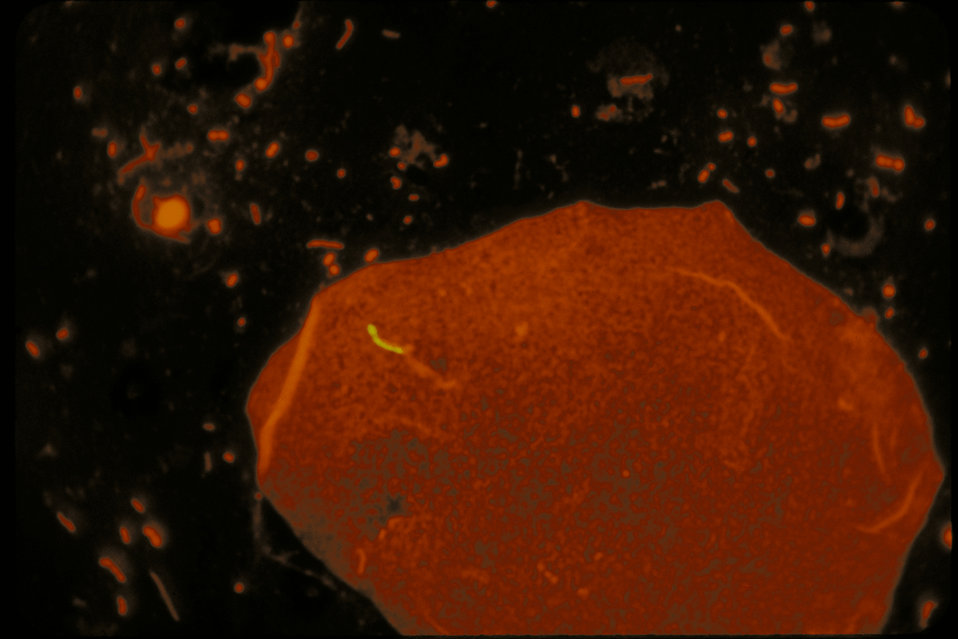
Mycobacterium tuberculosis in a sputum smear is stained using fluorescent auramine with acridine orange counterstain.